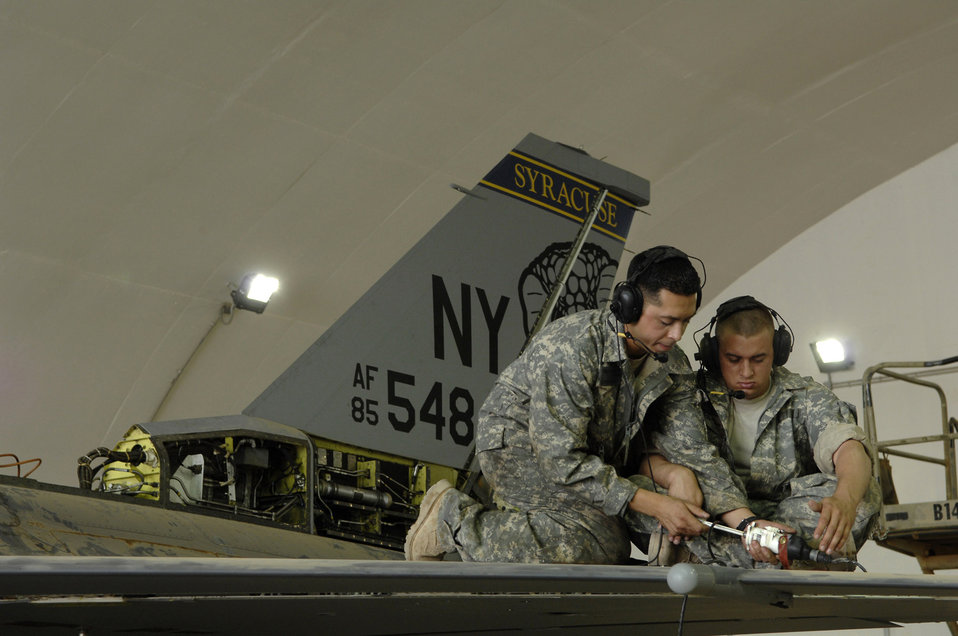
Just a phase

Staff Sgt. Caesar Rivera and Airman 1st Class Bryan Boswell test an actuator, a device used to control aircraft flaps, on an F-16 Fighting Falcon during a phase inspection June 18 at Joint Base Balad, Iraq. The leading edge flap, which the actuator controls, provides additional lift and drag during takeoff and landing. Sergeant Rivera and Airman Boswell are 332nd Expeditionary Aircraft Maintenance Squadron crew chiefs and both are deployed from Nellis Air Force Base, Nev.